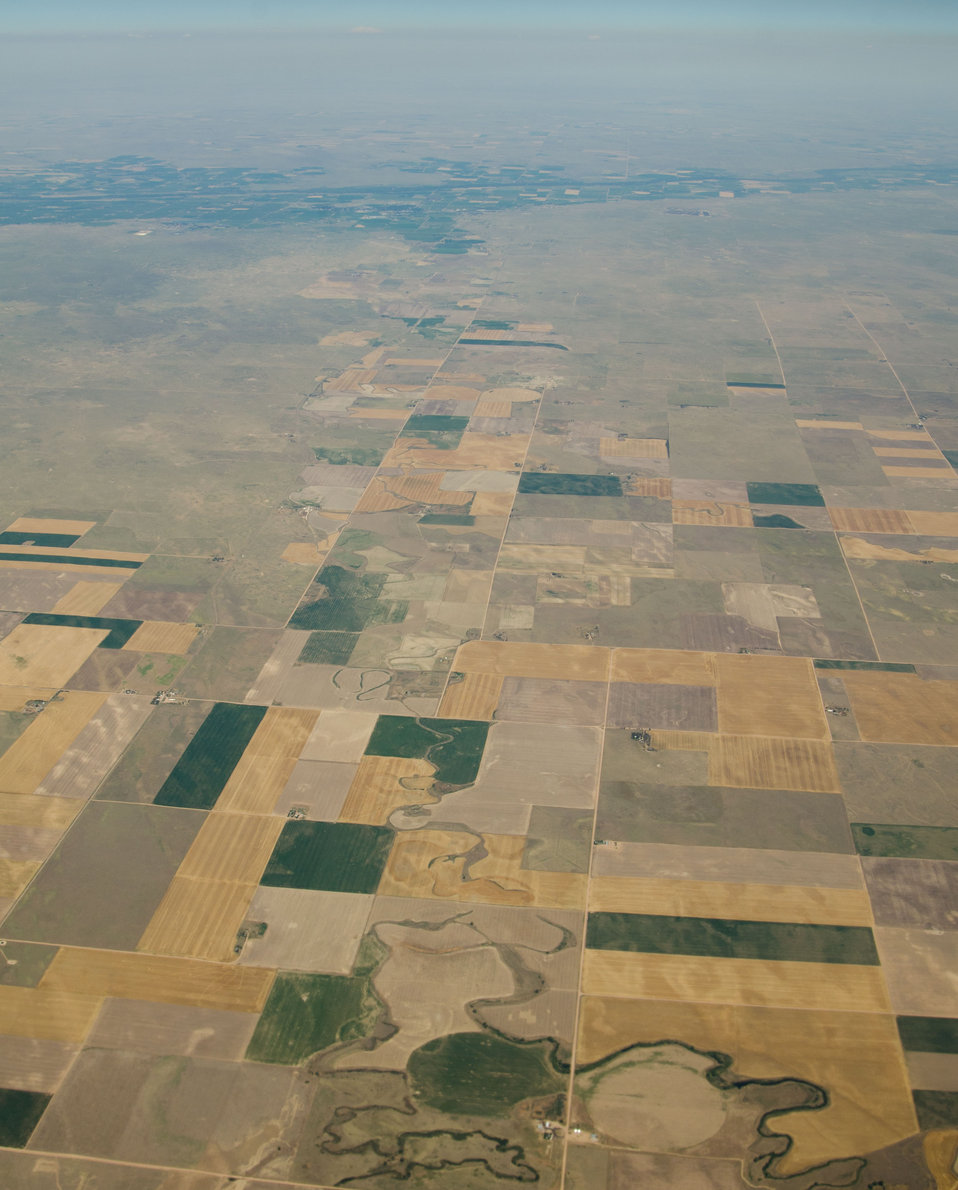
Aerial views of drought affected Colorado farm lands, 16 miles SE of Ft. Morgan, Colorado on Saturday, July 21, 2012. Green areas are irrigated, the yellow areas are dryland wheat crops.